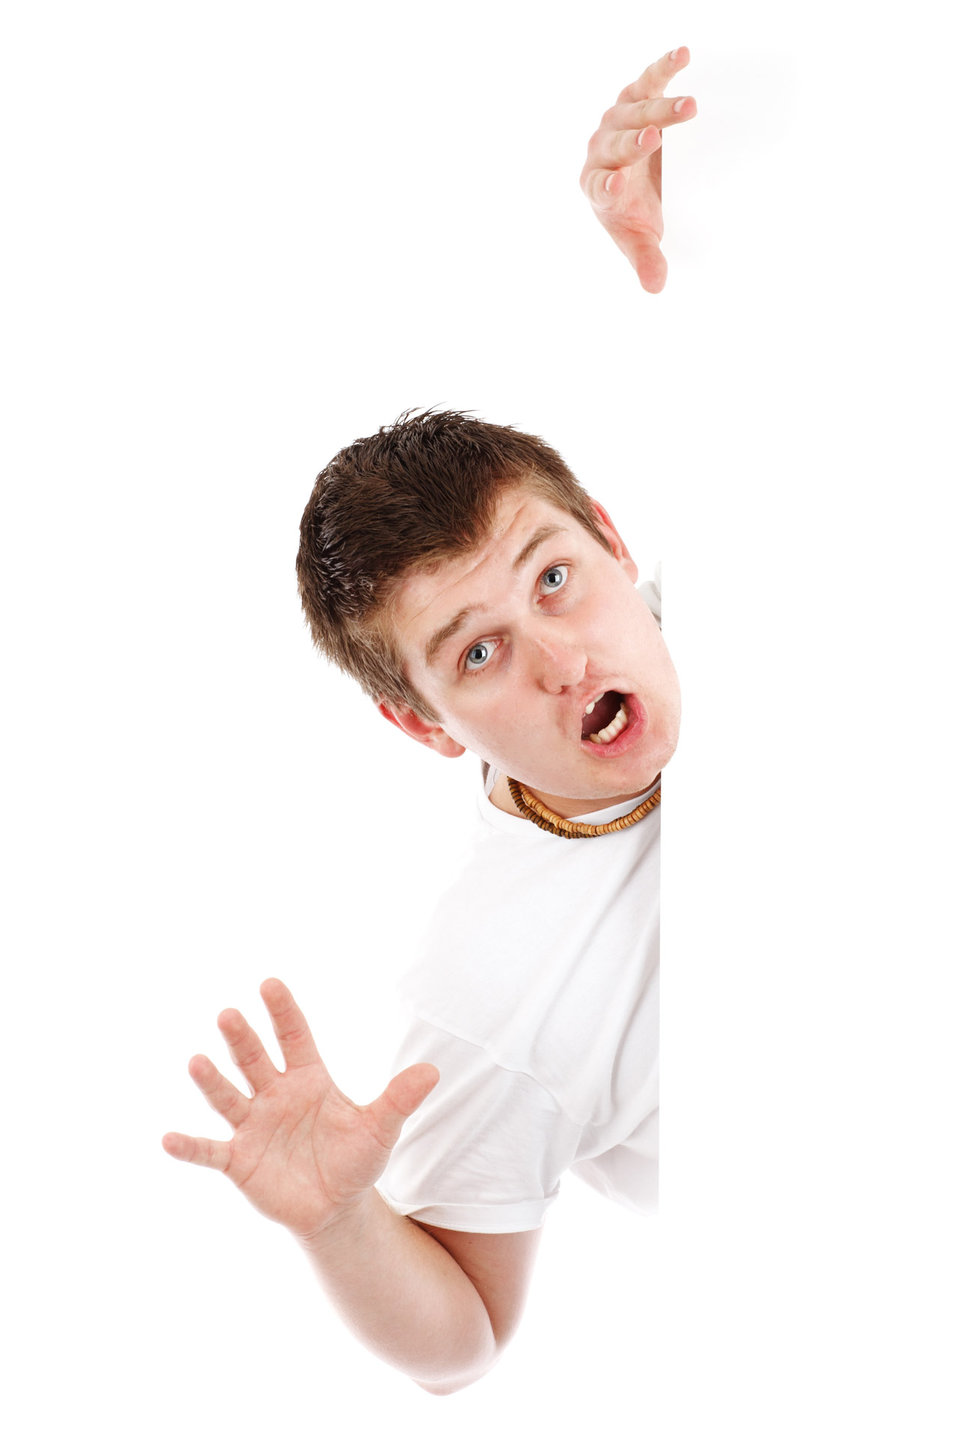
Scary young man

Young man making a scary face from behind a white board.